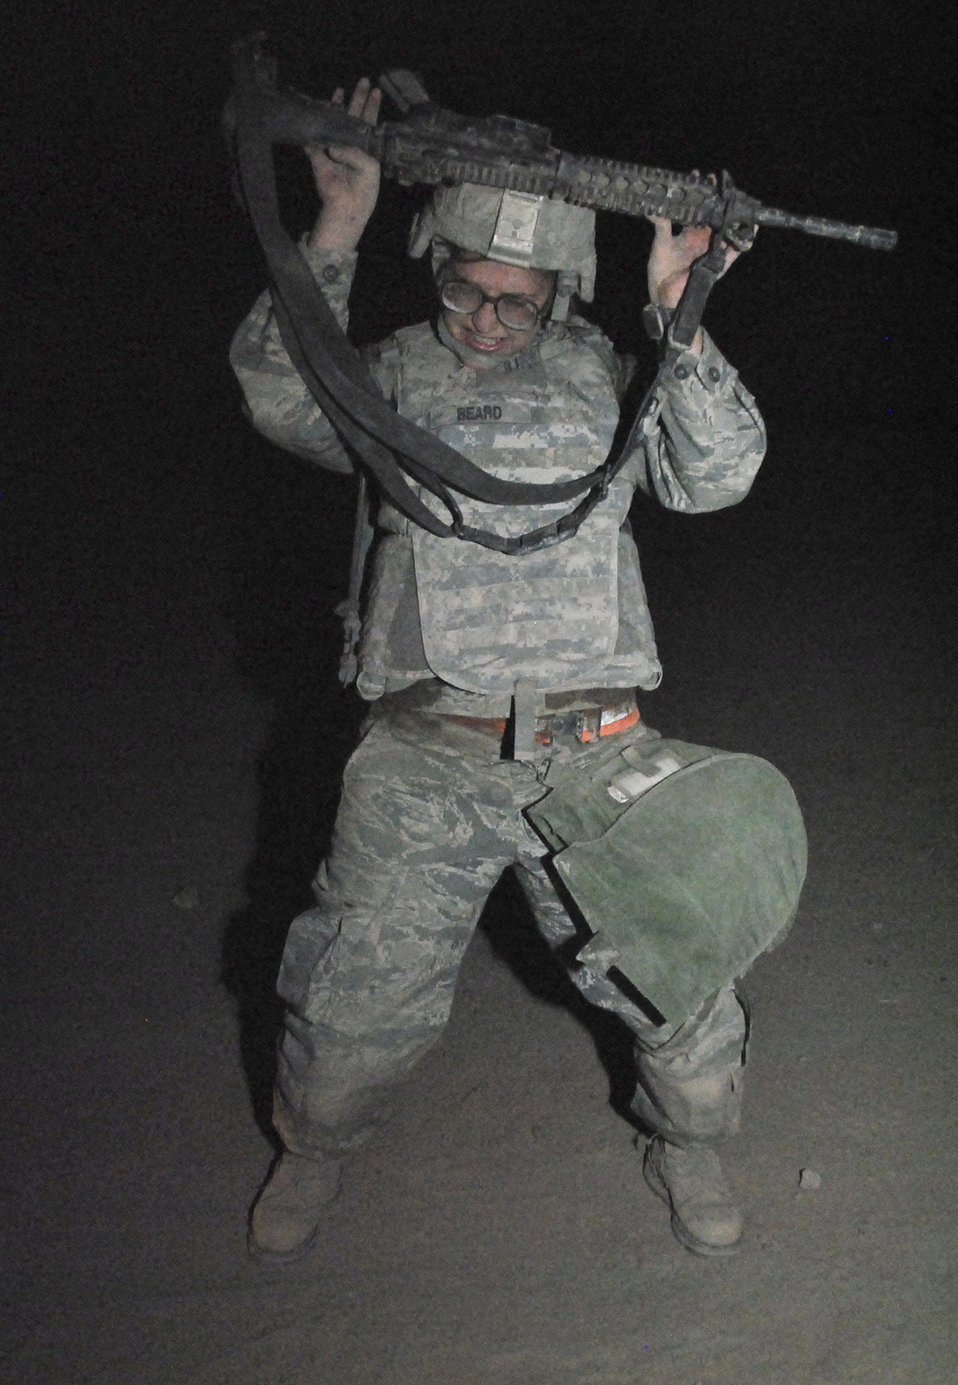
Airman marches, low-crawls and sweats her way into history: Part three

Senior Airman Courtney Beard struggles to hold an M-4 rifle above her head Nov. 21, 2010, at Victory Base Complex, Iraq. The Brooklyn, N.Y., native was the first female Airman to complete the 18-hour Spur Ride, a series of mental and physical tests, held by the III Corps, Task Force Phantom. Airman Beard is a 467th Expeditionary Intelligence Squadron intelligence analyst.